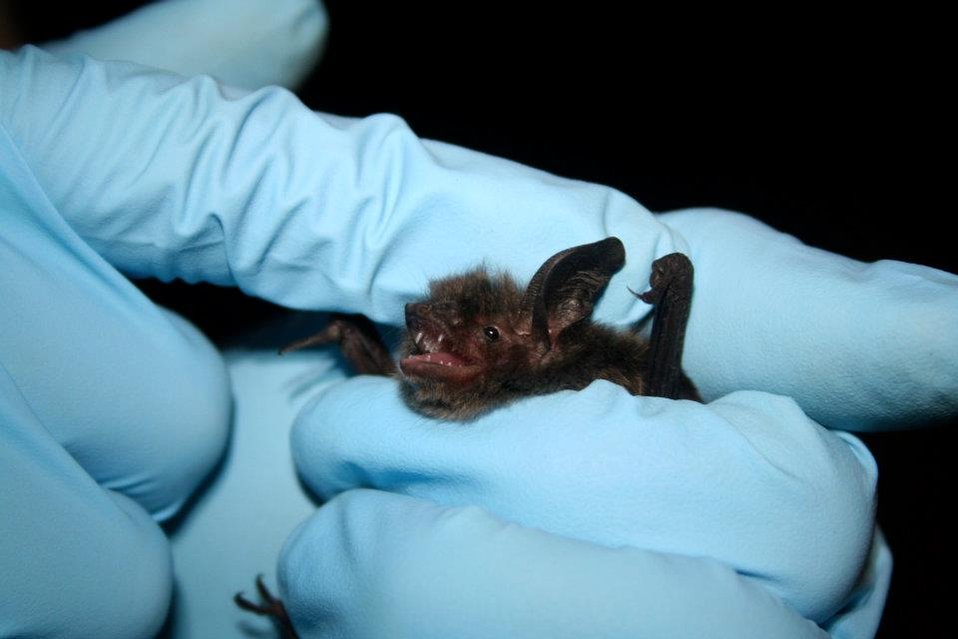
Little brown bat